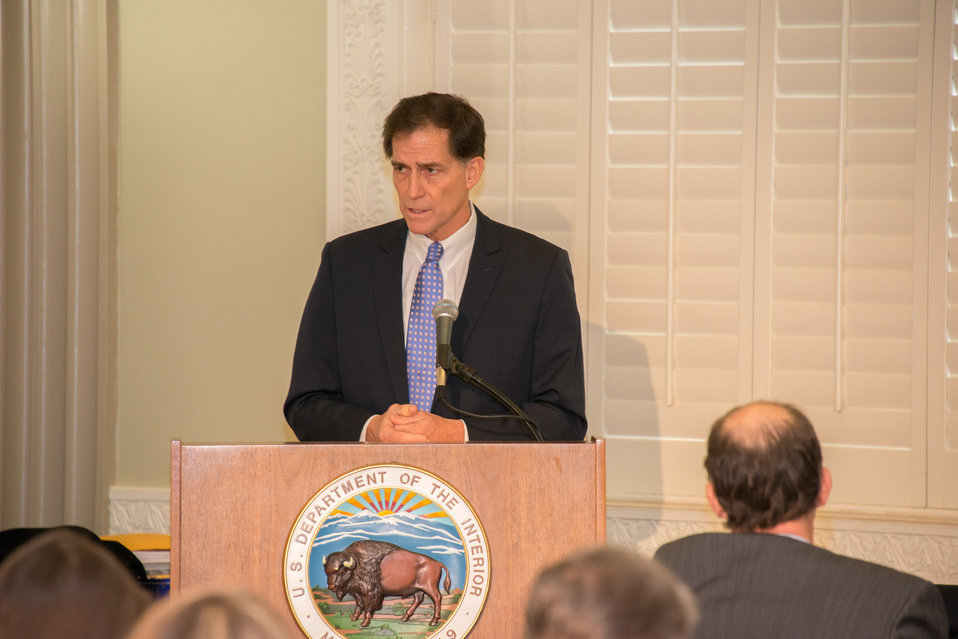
Public Meeting of Advisory Council on Wildlife Trafficking

Dan Ashe, Director of the U.S. Fish & Wildlife Service, addresses the Advisory Council on Wildlife Trafficking and attendees to the public meeting